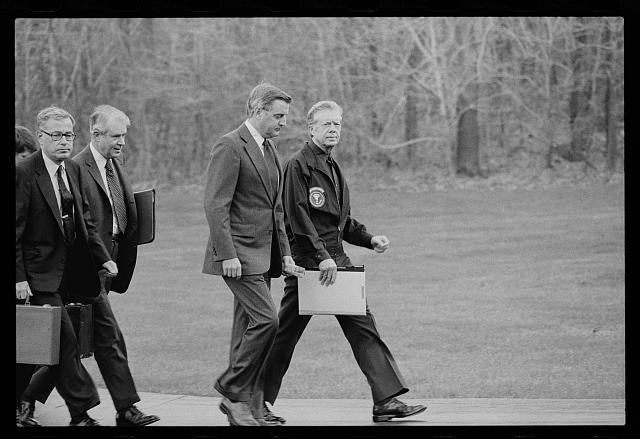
Secretary Vance at Camp David

Secretary of State Vance (center left) with President Jimmy Carter (right), Vice President Walter Mondale (center right), and Secretary of Defense Harold Brown (left) after disembarking from their helicopter to meet about the Iran Hostage Crisis at Camp David, Maryland. 11/23/79